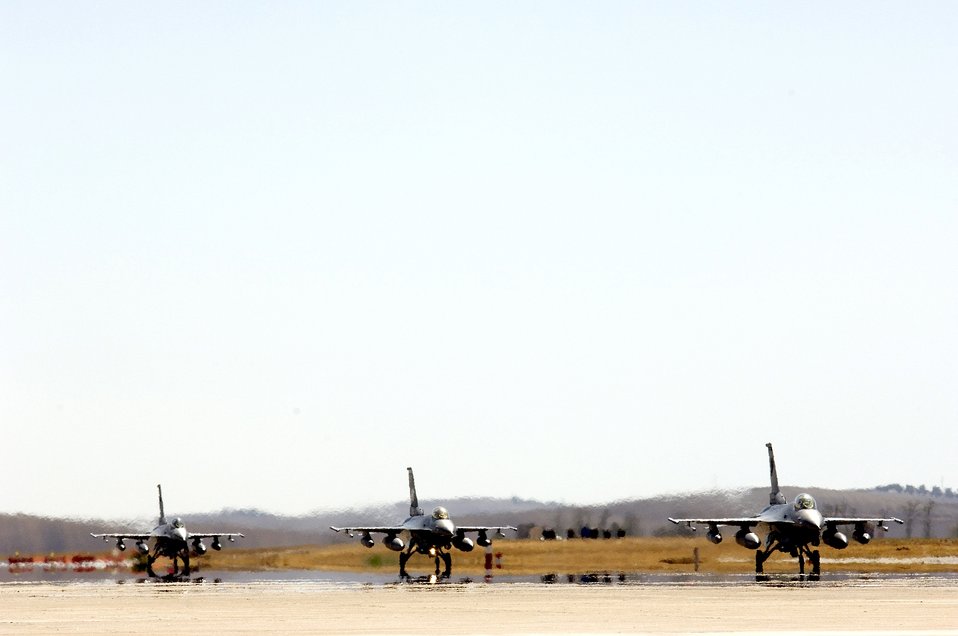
'Coronet East' flies home

MORON AIR BASE, Spain -- F-16 Fighting Falcons taxi in for service and crew rest here. The Air Force reservists from the 180th Fighter Wing at Toledo, Ohio, are on their way home after supporting Operation Iraqi Freedom. The fighters are part of